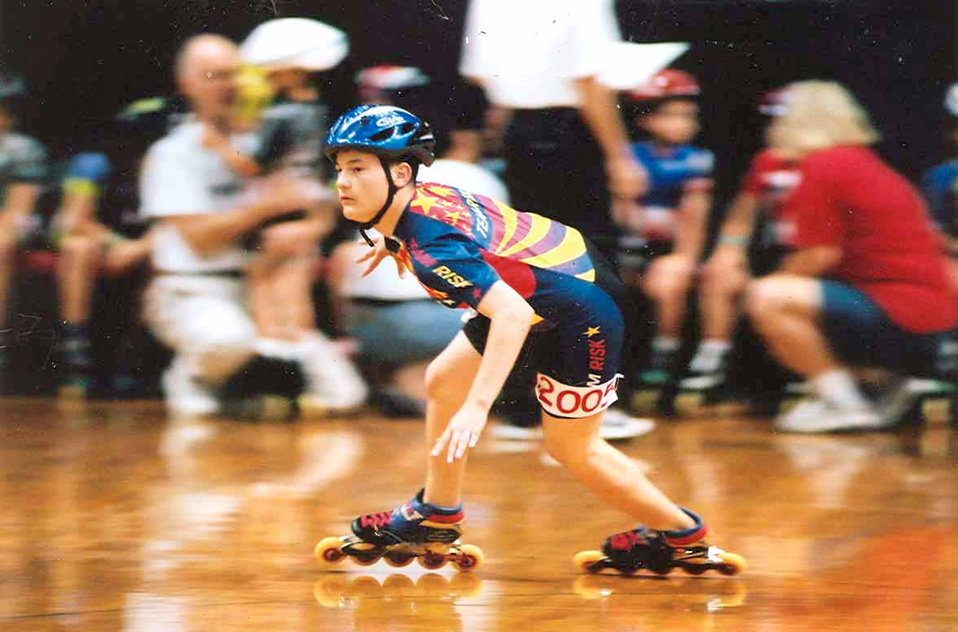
Eglin Airman has real need for speed skates

PENSACOLA, Fla. -- Airman 1st Class Eddie Canino competes in the 2001 National Indoor Speed and Figure Skating Championships here. He is an F-16 Fighting Falcon avionics technician with the 46th Aircraft Maintenance Squadron at nearby Eglin Air Force Base.